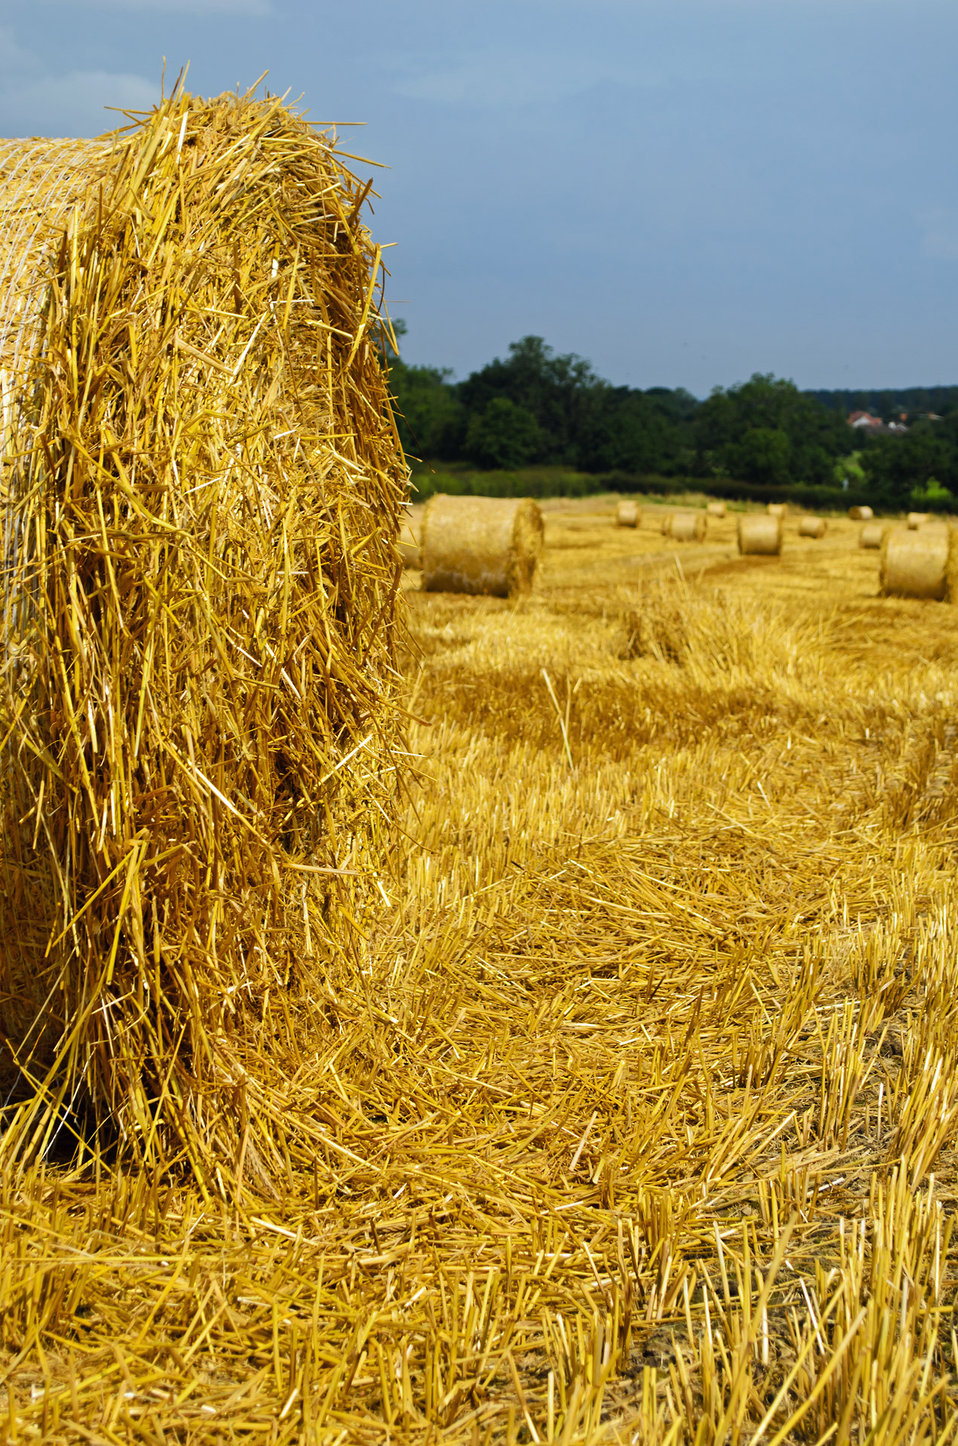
Harvested field with straw.